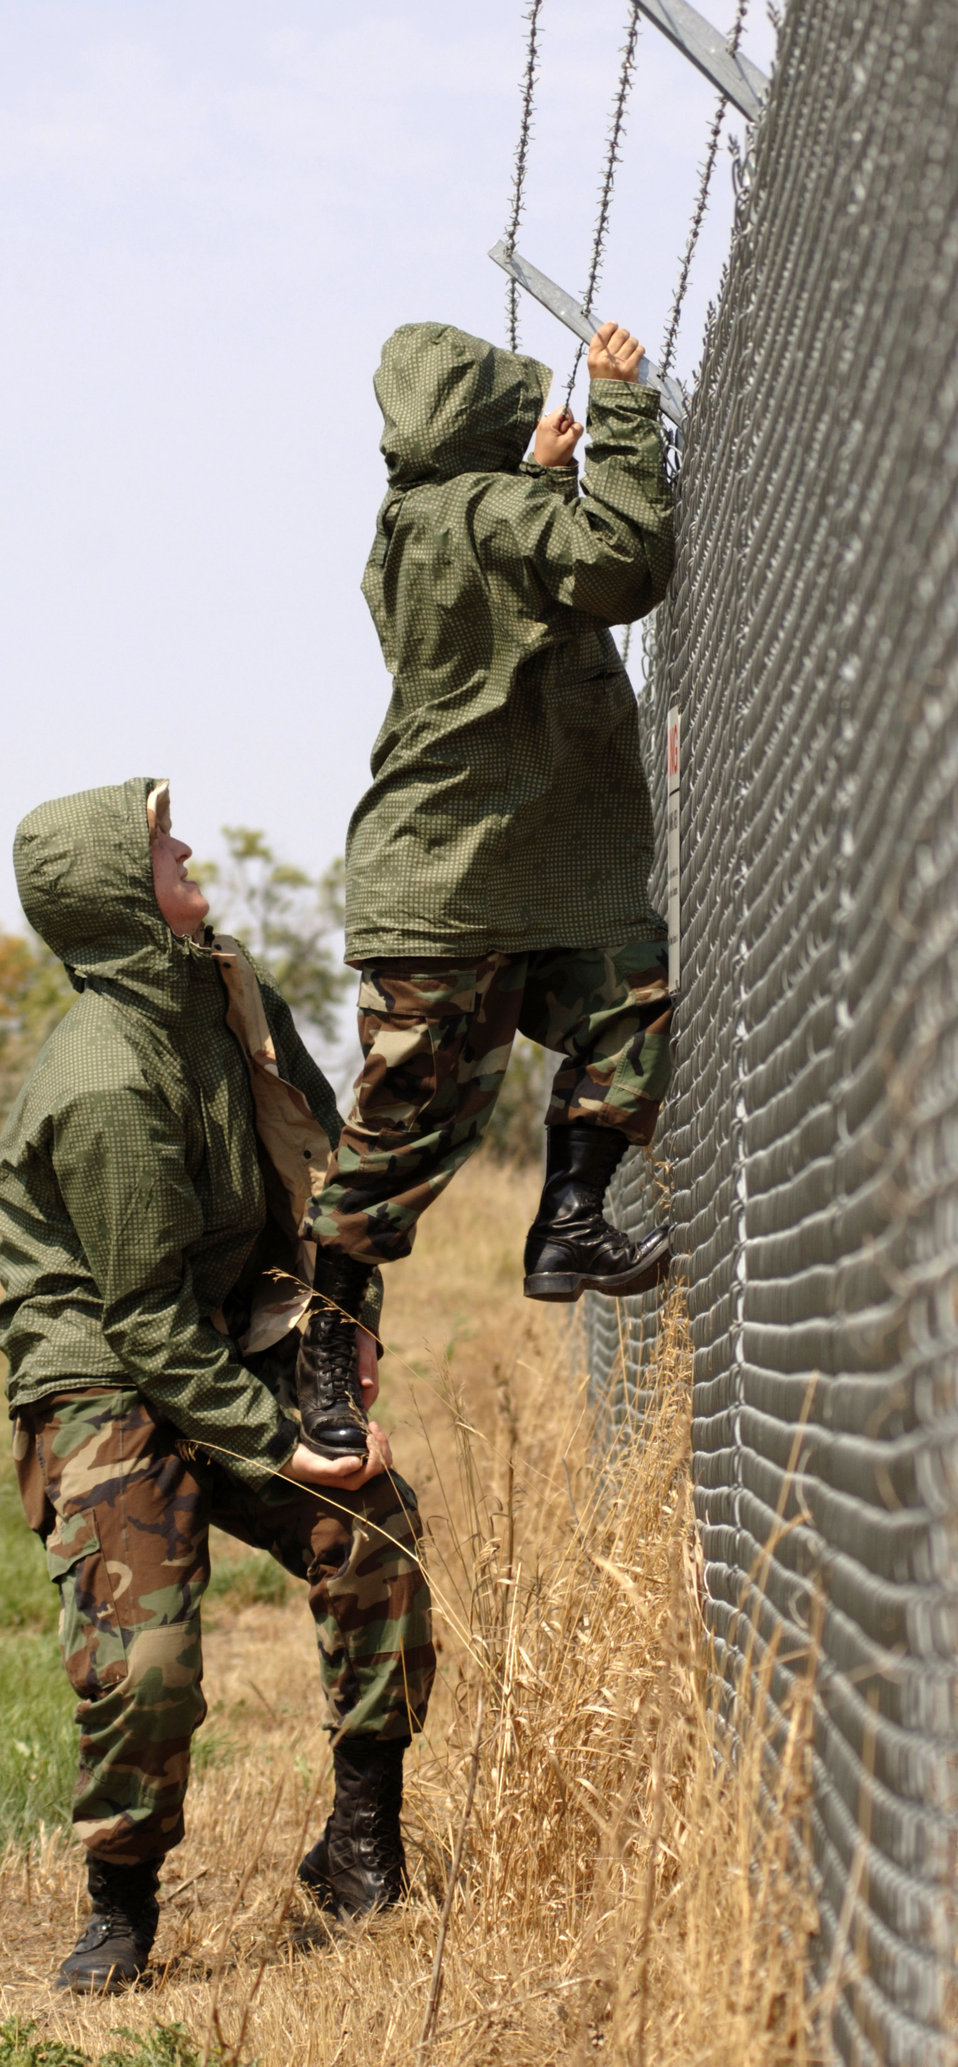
Unique mission: Guarding 91st Space Wing missile complex

Opposition forces attempted to breach a launch control training facility at Minot Air Force Base, N.D. Aug. 22. Personnel of the 91th Security Forces Group use a wide array of scenarios and techniques to hone their skills to protect the Minuteman III missile facilities scattered throughout North Dakota.